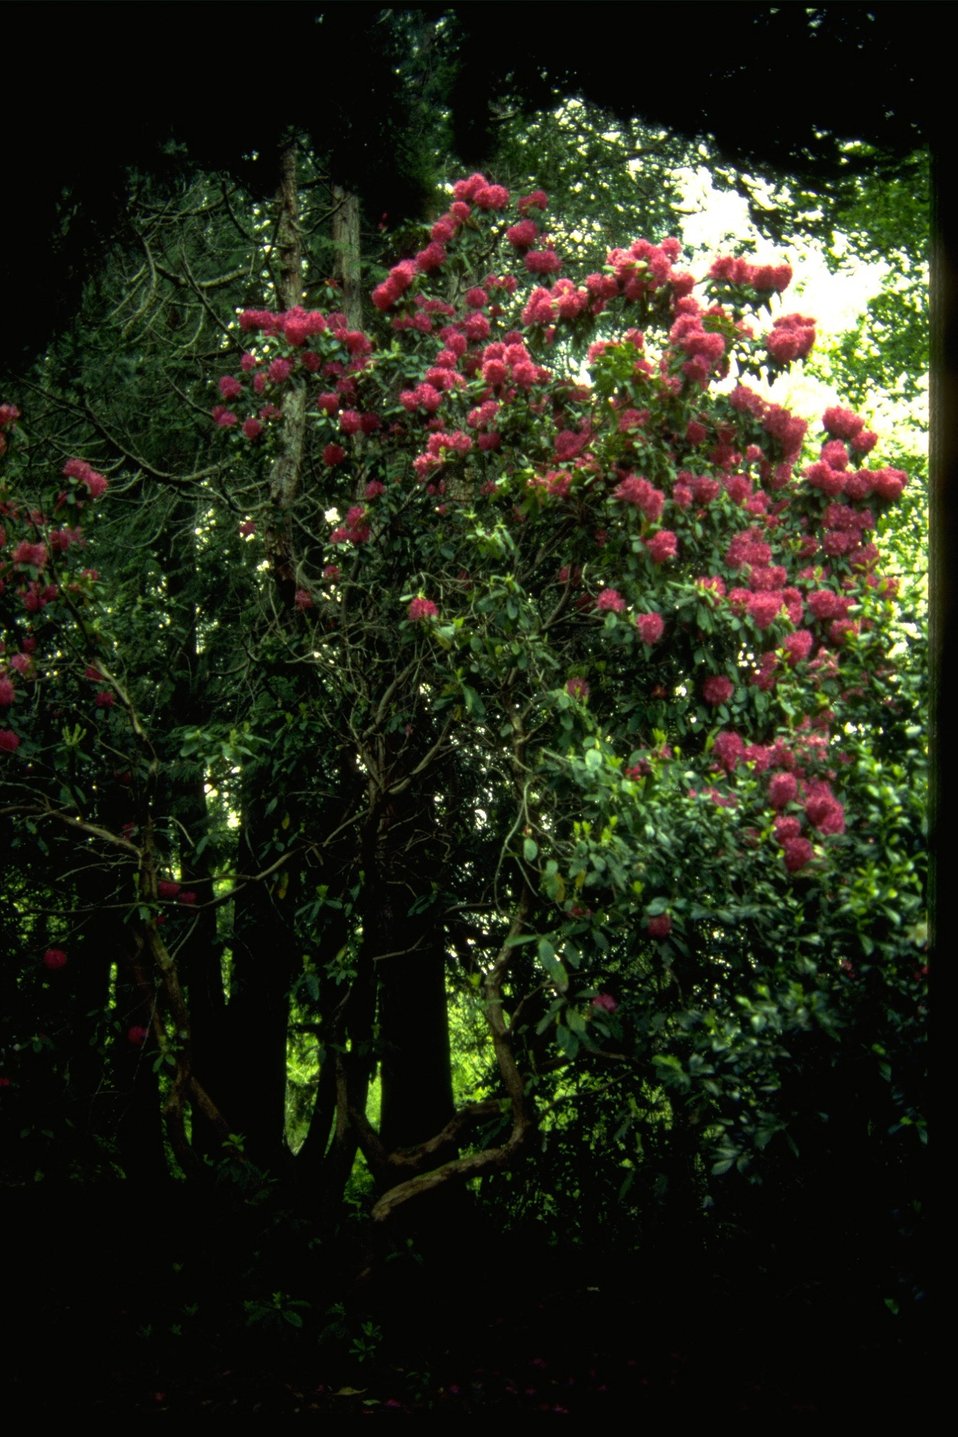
Beautiful flowers at Spruce Reach Island.